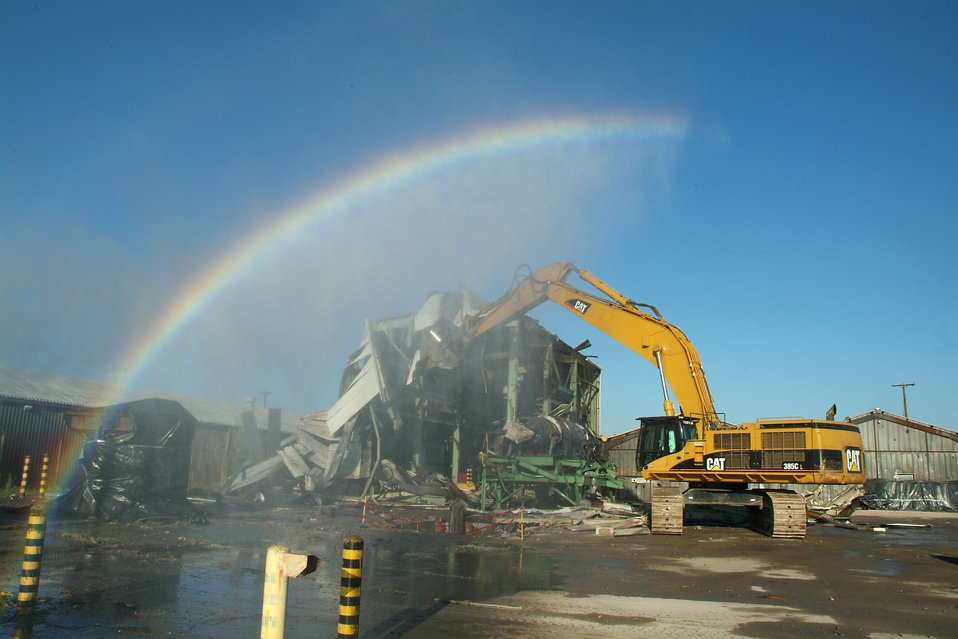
Paducah demolition - East End Smelter

Heavy machinery demolishes the East End Smelter in September 2010. Recovery Act work moved the project ahead 22 years, and $12 million in Smelter savings was shifted to Feed Plant cleanup.